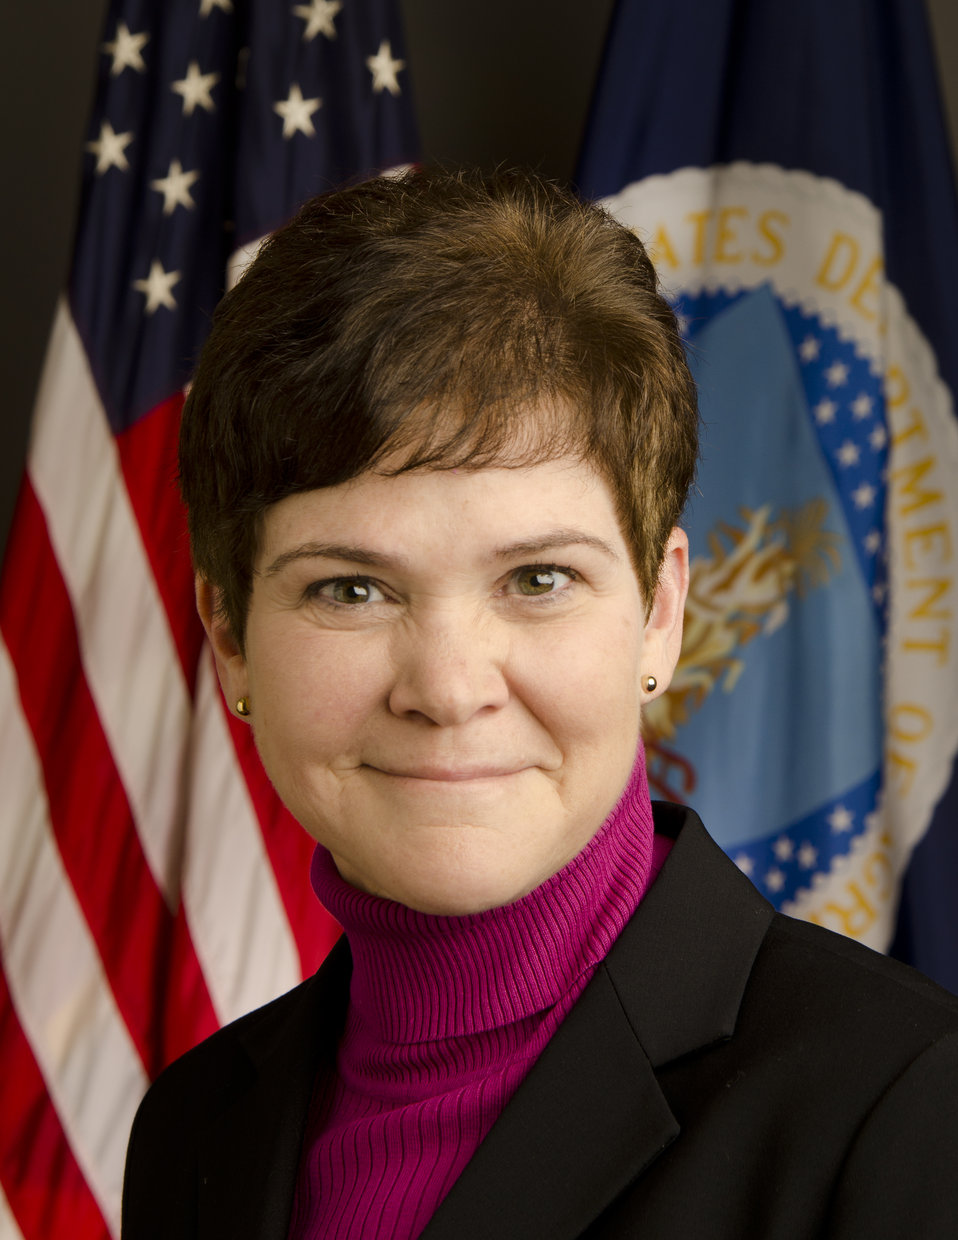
20131115-OSEC-KJH-3131 Agriculture Deputy Secretary Krysta Harden

U.S Department of Agriculture Deputy Secretary Krysta Harden.